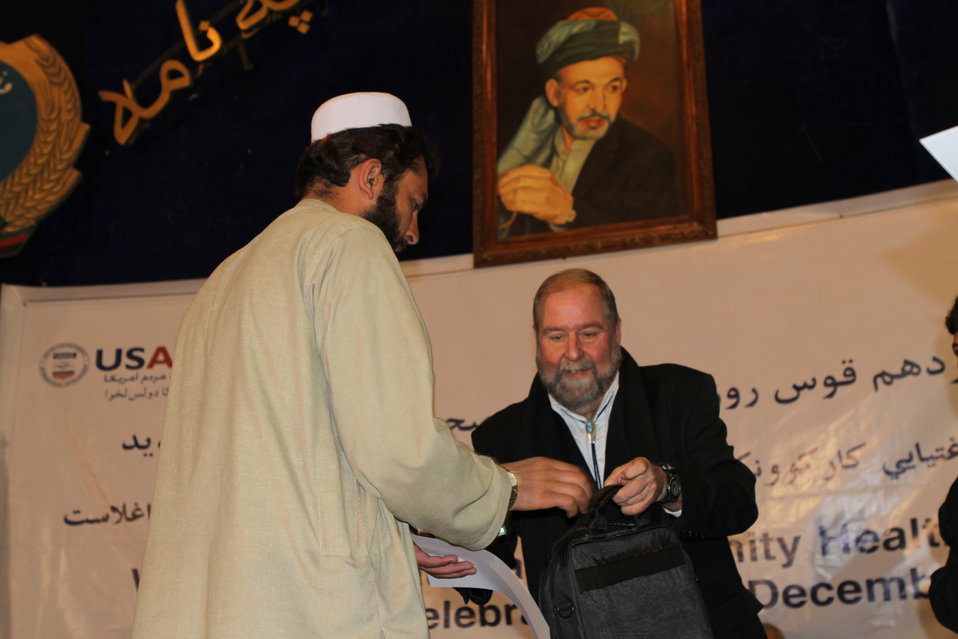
Community Health Workers Celebrated

Kabul, Afghanistan | December 5, 2010 — In support of the United Nations designated International Volunteer Day for Economic and Social Development, Afghanistan’s Ministry of Public Health celebrated its annual Community Health Worker Day today. Acting Minister of Public Health Dr. Suraya Dalil, USAID Senior Deputy Mission Director Robert Hellyer, other government officials, and international donors joined in recognizing the critical contribution of community health workers in Afghanistan and encouraging them to continue their voluntary support to their communities.
The event praised the contributions of the more than 22,000 volunteers throughout the country who deliver community level health-education, counseling, and services out of village health posts located in private homes. The Ministry of Public Health envisioned that community-based healthcare programs will actively encourage communities and families to adopt healthy lifestyles and behaviors, and provide families access to high quality and socially acceptable preventative medicine and life-saving services.
“We have 22,000 community health workers in Afghanistan that are able to implement the basic and standard medicines. They all have been trained through a job description,” said Minister Dalil. Addressing the health workers, she added, “I am proud and feel powerful that I have people like you.”
USAID-funded health projects collaborate closely with the Ministry of Public Health to improve the health and nutritional status of Afghans, provide quality primary healthcare, and promote healthy behaviors at the community and household-levels. USAID supported the training of more than 9,000 of the volunteer community health workers currently working in Afghanistan.
“On behalf of the American people, I congratulate the Community Health Workers for their diligence to gain the skills and knowledge necessary to serve their communities in this important role,” said USAID Senior Deputy Mission Director Hellyer. “USAID strongly supports community based health care and believes that quality community-based health services are essential to reaching Afghanistan’s Millennium Development Goals.”
To support the Basic Package of Health Services, USAID assisted in developing the community health worker training manual, helped train community health worker supervisors and master-trainers, facilitated in-service training, and produced and developed reporting tools, job aids, and education materials.